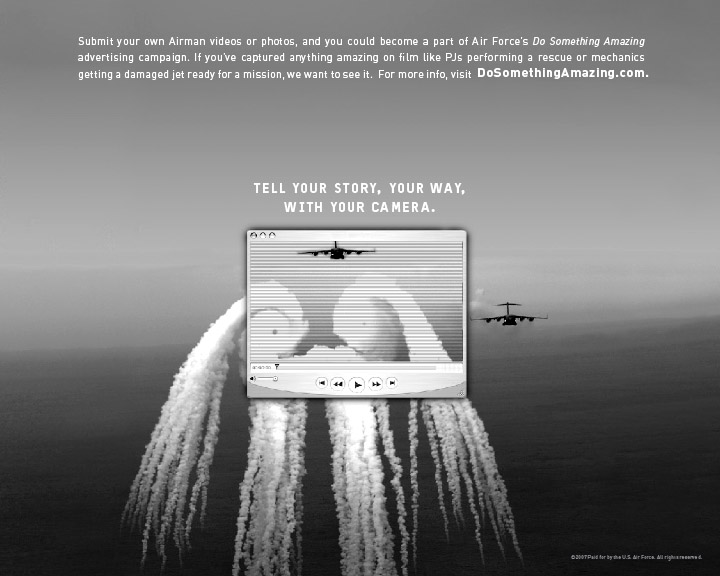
Airmen invited to 'Do Something Amazing'

As part of the